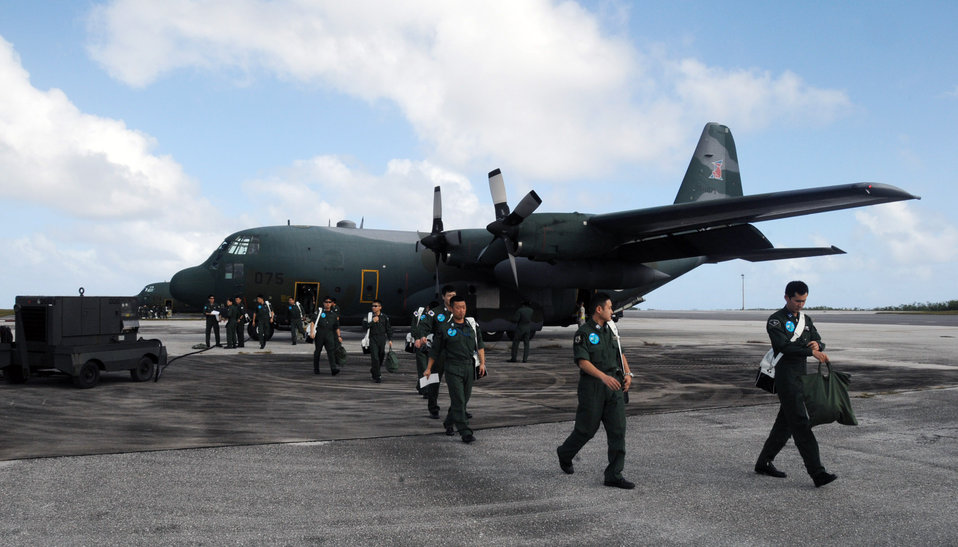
Japan forces arrive in Guam for joint exercise

Japan Air Self Defense Force members offload from a C-130 after arriving Jan. 27 at Andersen Air Force Base, Guam. More than 60 JASDF members arrived in three C-130s to participate in Exercise Cope North 09-1, a regularly scheduled exercise scheduled for Feb. 2 through 13. Cope North is designed to enhance U.S. and Japanese air operations in defense of Japan.